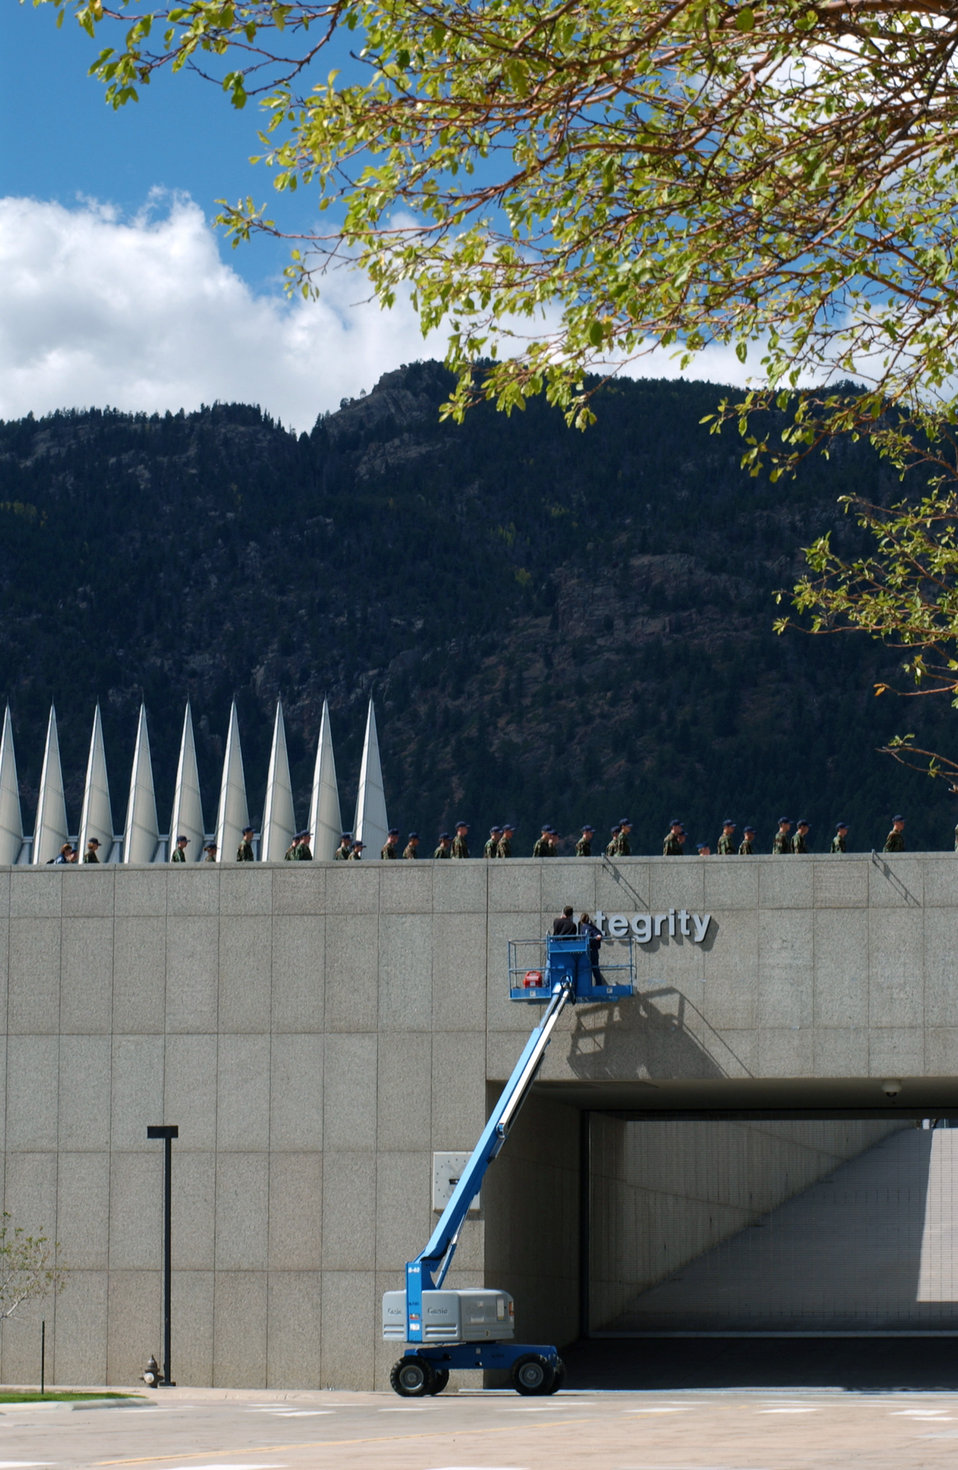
Values added

U.S. AIR FORCE ACADEMY, Colo. -- Air Force Academy cadets walk along the terrazzo as contractors attach the first letters of the Air Force core values to the ramp. Air Force leaders decided in 2003 that the poetic reference "Bring me men ..." was out of step with the current Air Force culture and offensive to many people. The core values are: integrity first, service before self and excellence in all we do. The base of the ramp is where new cadets take their first steps into the academy.